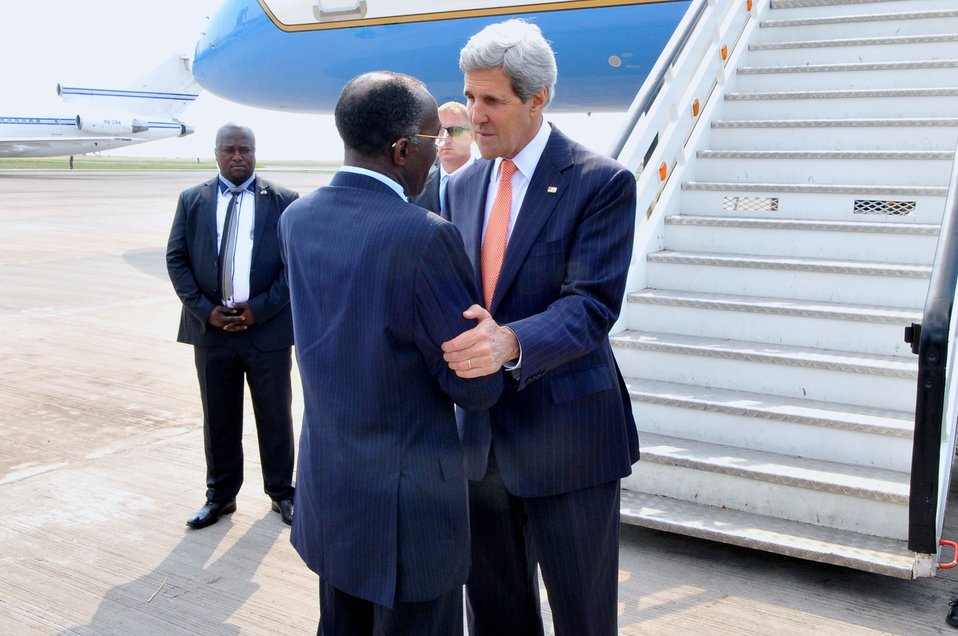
Democratic Republic of Congo Foreign Minister Tshibanda Greets Secretary Kerry

Democratic Republic of Congo Foreign Minister Raymond Tshibanda greets U.S. Secretary of State John Kerry as he arrives in Kinshasa on May 3, 2014.